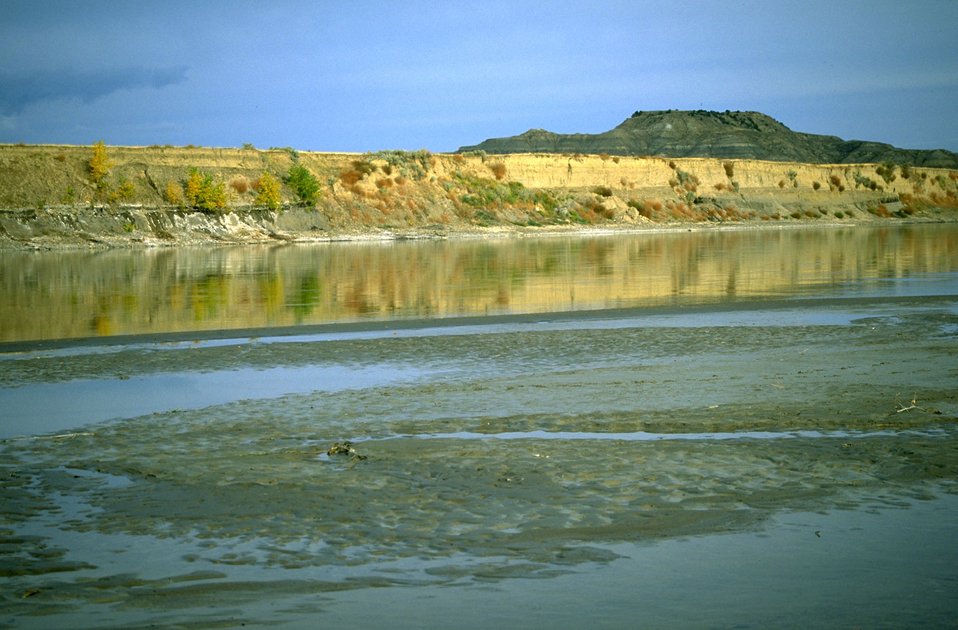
Reflection of Sheridan Butte on the Yellowstone River